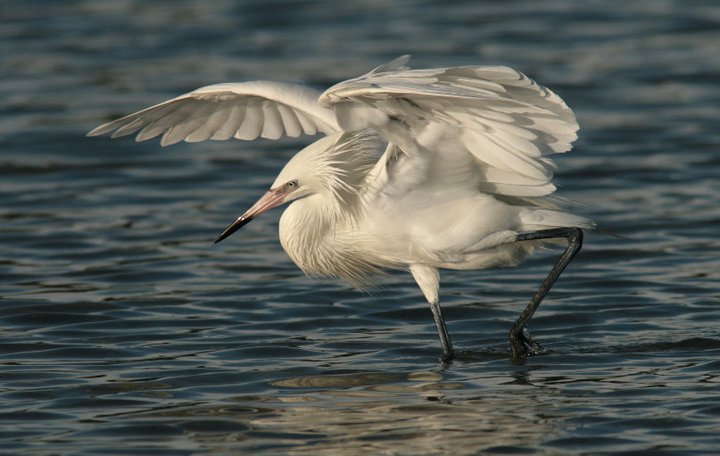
Egret

Florida Keys National Wildlife Refuge complex.